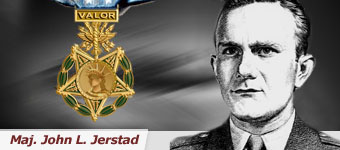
Maj. John L. Jerstad

During Operation Tidal Wave, the most highly decorated military mission in U.S. history, 179 B-24s took off on an 18-hour, 2,400 mile round trip mission to destroy the largest of the Nazi-held oil refineries at Ploesti, Romania. Despite his aircraft in flames, Maj. John L. Jerstad completed the mission and was posthumously awarded the Medal of Honor.